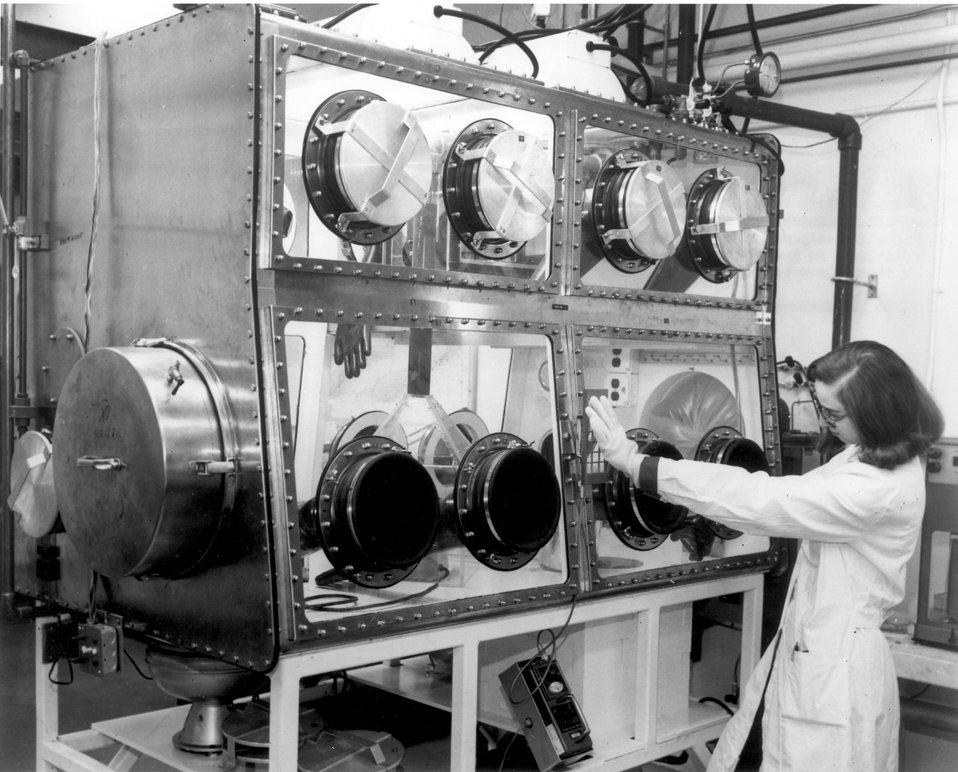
At the Alpha-Gamma Service Facility in the Hot Laboratory at Brookhaven National Laboratory, a technician is handling a radioactive sample inside one of three glove box facilities. c. 1968